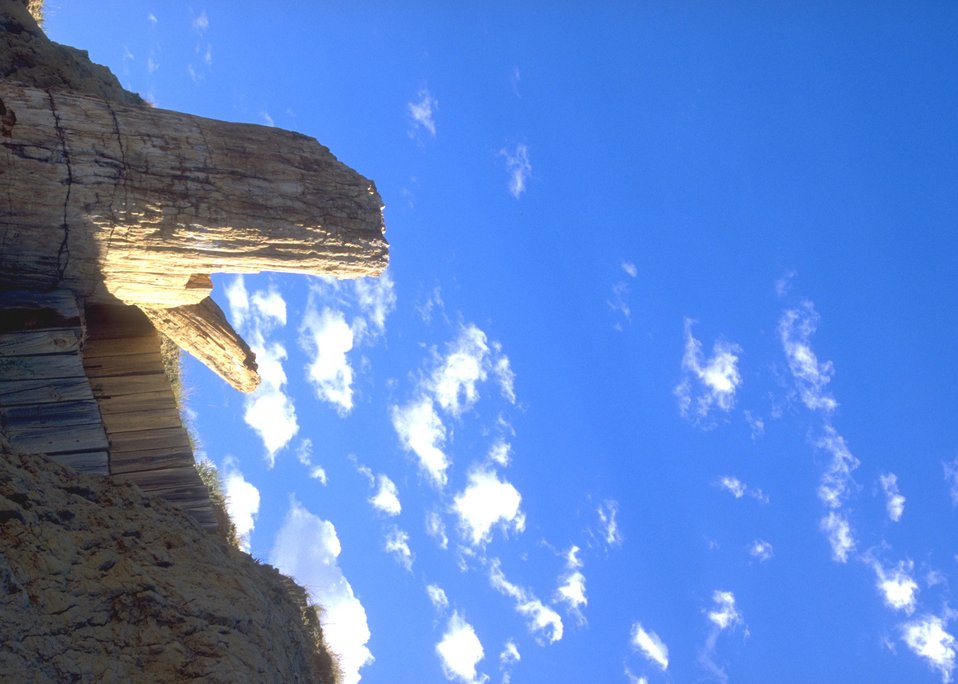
Dry Creek Petrified Tree Area, Buffalo Field Office.